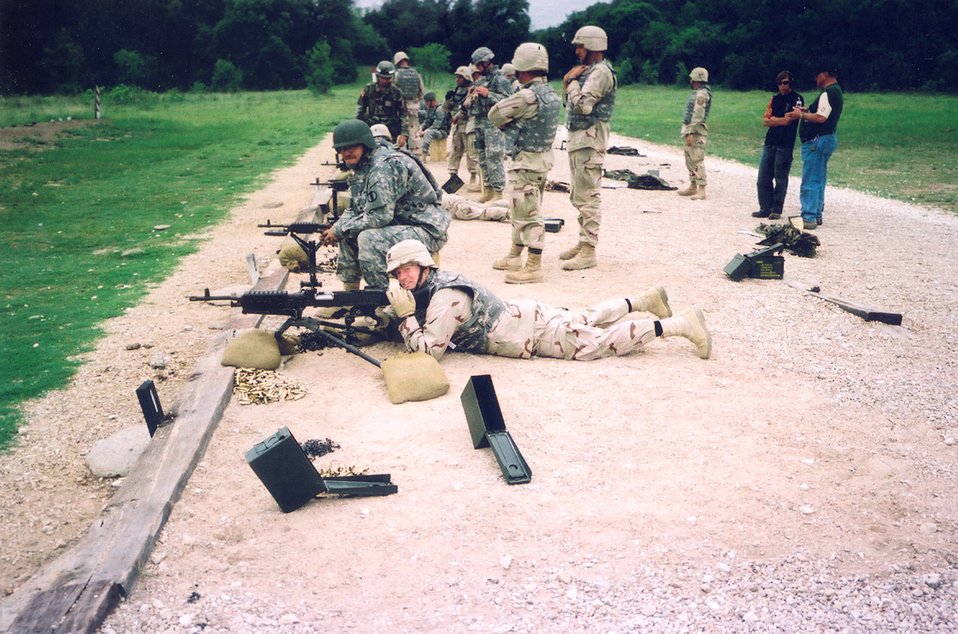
Spangdahlem Airmen deploy to fill Army billets

Capt. Scott MacNeil learns Army shooting techniques at Fort Hood, Texas, before deploying to fill an In Lieu of Forces billet in Iraq. Captain MacNeil is assigned to the 52nd Logistics Readiness Squadron from Spangdahlem Air Base, Germany.